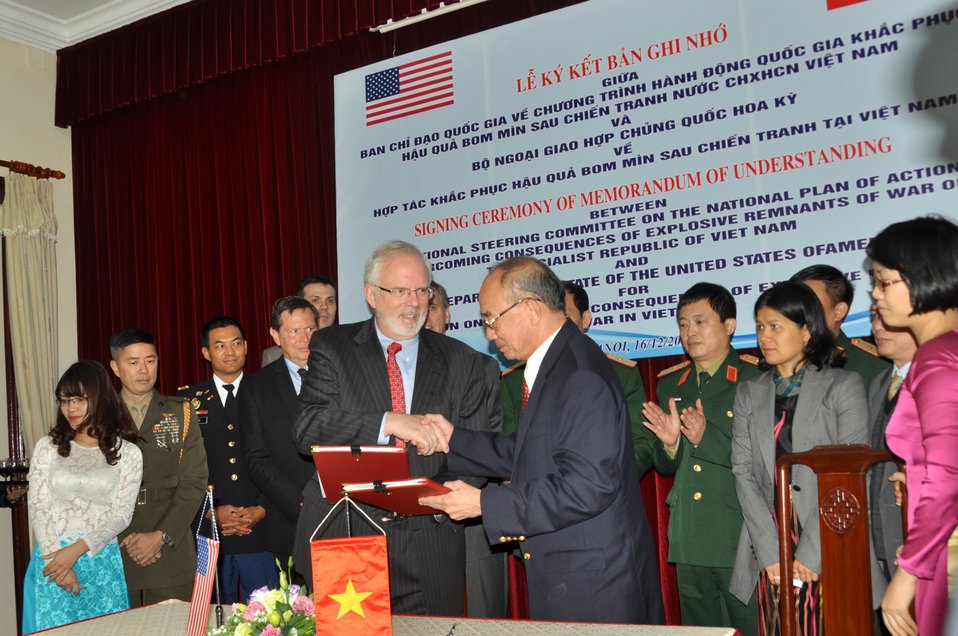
U.S. Embassador to Vietnam David Shear (left) and Mr. Bui Hong Linh, Vietnam’s Vice-Minister of the Ministry of Labor, Invalids and Social Affairs (MOLISA) and Committee 504 Vice-Chairman, exchange the signed MoU.

Hanoi, December 16, 2013.